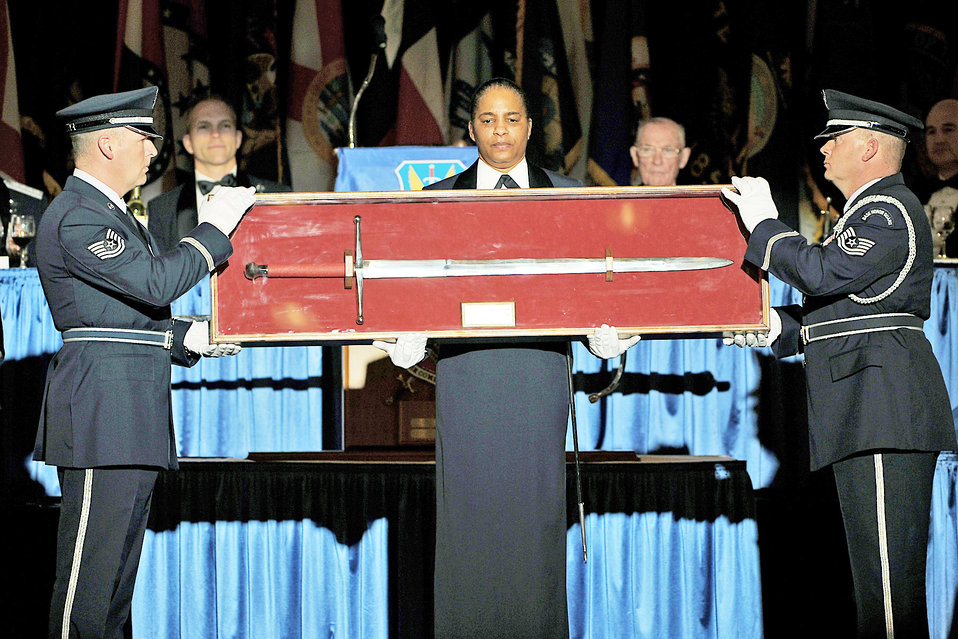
Order of the Sword

OFFUTT AIR FORCE BASE, Neb. ? Technical Sgt. Chris Ellis, superintendent of Dyess AFB, TX., honor guard, Chief Master Sgt. Shelina Frey, Langely AFB VA., and Technical Sgt. Troy Bizzack, Hollman AFB, N.M., honor guard non-commission officer in change, present the sword during the Air Combat Command Order of the Sword ceremony at the Doubletree Hotel in Omaha, Neb., Jan. 14. The honor was established by the Air Force enlisted corps to recognize and honor senior officers and civilian equivalents, for ?conspicuous and significant contributions to the welfare and prestige of the enlisted force and mission effectiveness.?

U.S. Air Force Photo by: Charles Haymond